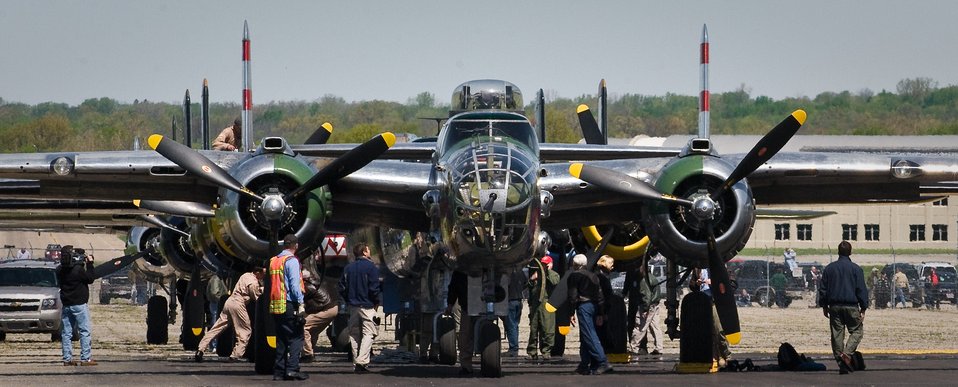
Doolittle Raiders Memorial Flyover

B-25 Mitchell bombers at the National Museum of the U.S. Air Force at Wright-Patterson Air Force Base, Ohio are being prepared for a formation flyover prior to the Doolittle Raiders Memorial Service in the museum's Memorial Park on April 18, 2010. This is one of the largest gatherings of the Mitchell Bombers since the historic raid over Tokyo, Japan during World War II.